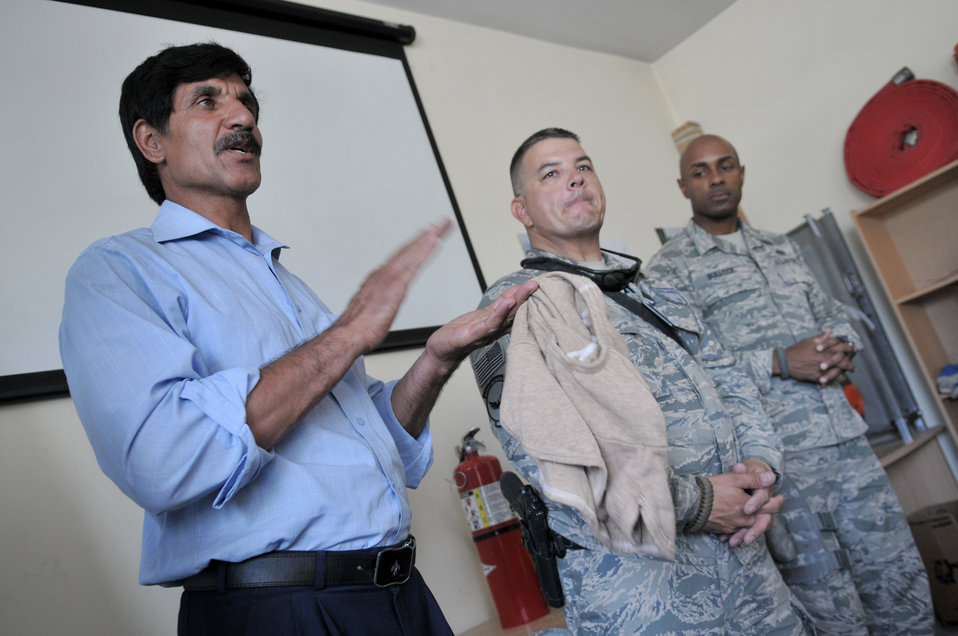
Firefighters donate to Afghans

Afghan fire fighter instructor Sadar Ahmad thanks Master Sgt. Edward Nowak for the donated Nomex fire-protection hoods to trainees inside the Afghan air force fire fighting training complex May 28, 2011, in Kabul, Afghanistan. The hoods were donated by the Robeson County Firefighters Association in Parkton, N.C. Sergeant Nowak is a 440th Air Expeditionary Advisory Squadron C-27 production superintendent adviser and volunteer firefighter.